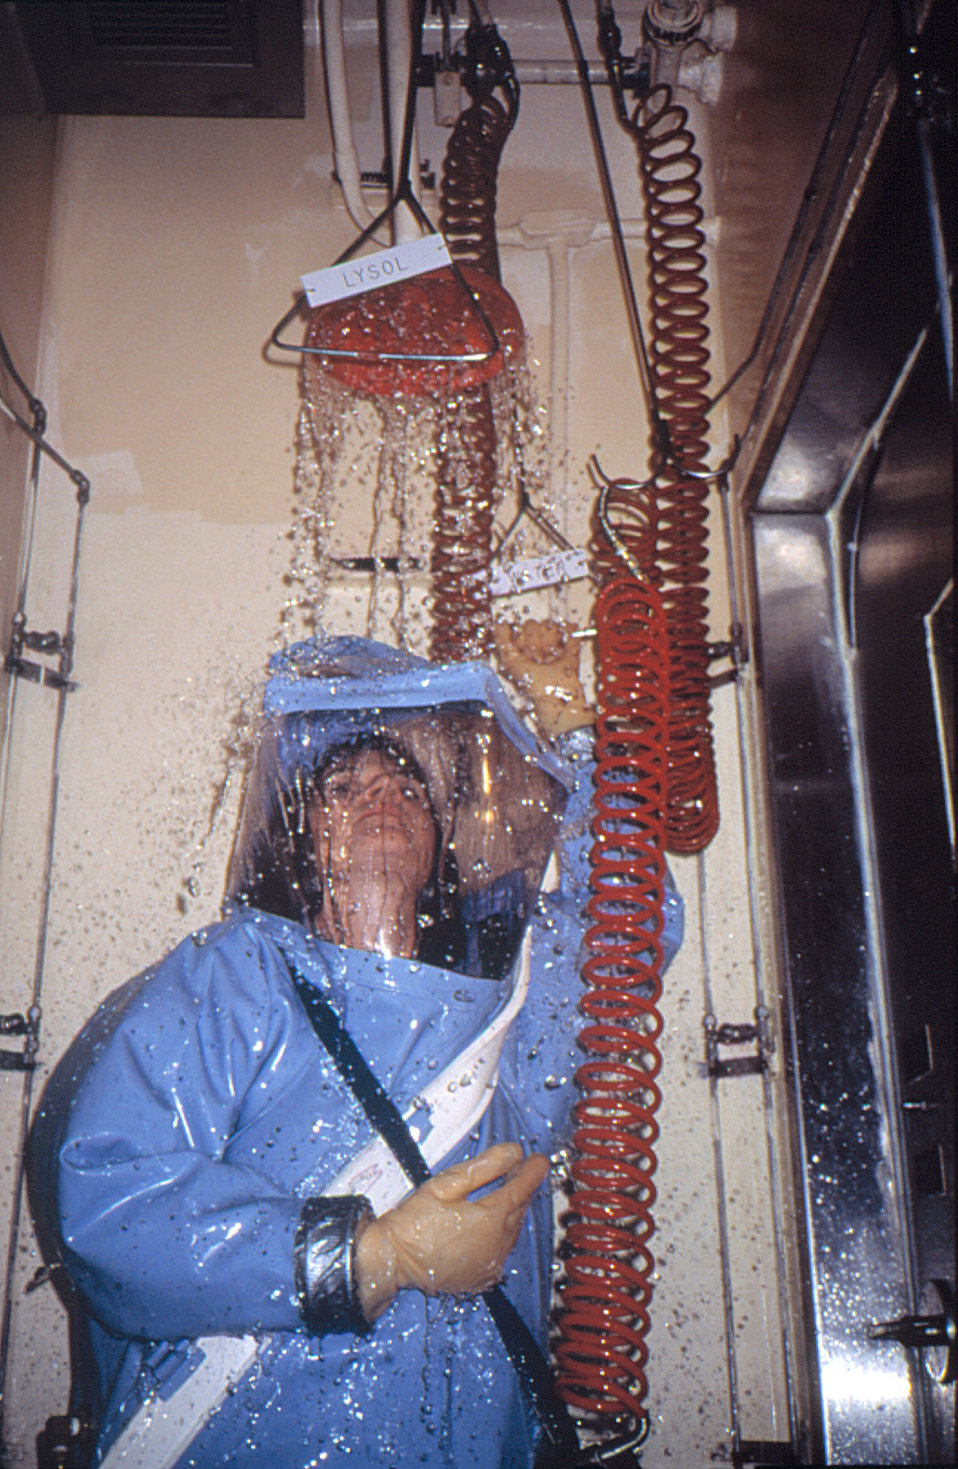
A CDC scientist showers in a protective suite before leaving a Biosafety Level 4 laboratory.